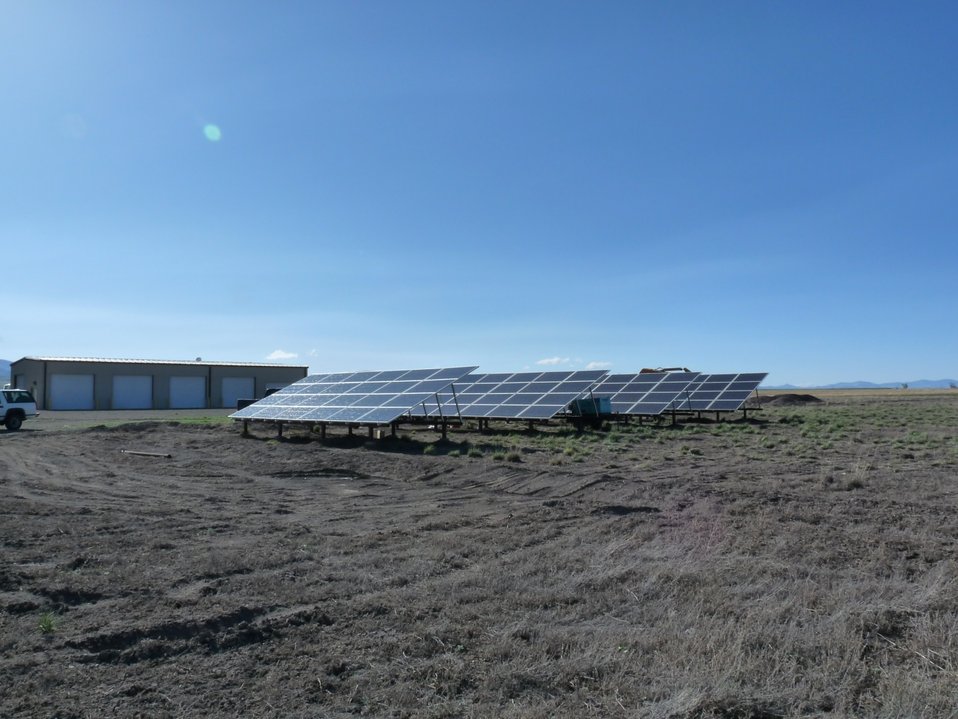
Monte Vista NWR Solar Panels

The new photovoltaic systems at Monte Vista National Wildlife Refuge (NWR) in Colorado has four arrays with 24 panels each, for a total of 96 panels per system. The solar contractor fabricated custom steel support frames for the system at Monte Vista National Wildlife Refuge, which produces approximately 20 kilowatts (KW) of electricity on a fully sunny day. Monte Vista NWR is part of the San Luis Vally NWR Complex, which includes the Alamosa and Baca National Wildlife Refuges.